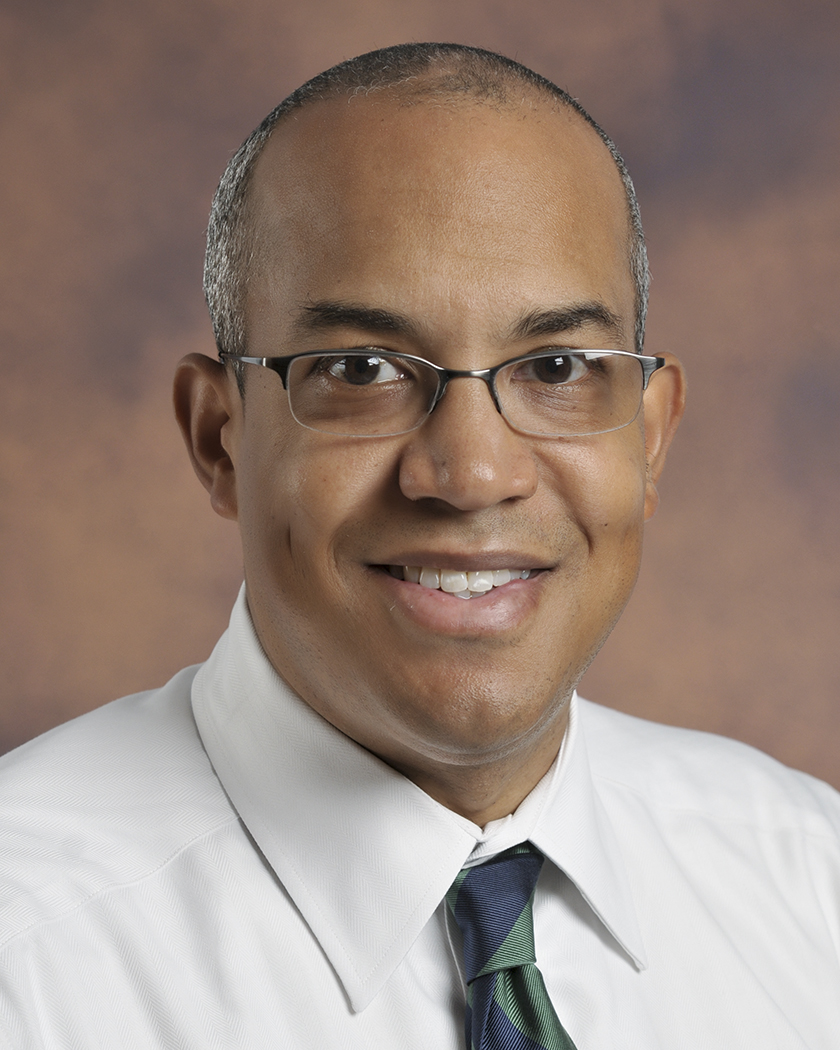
John Hale III, Deputy Director, Office of Small and Disadvantaged Business Utilization, Office of Economic Impact and Diversity